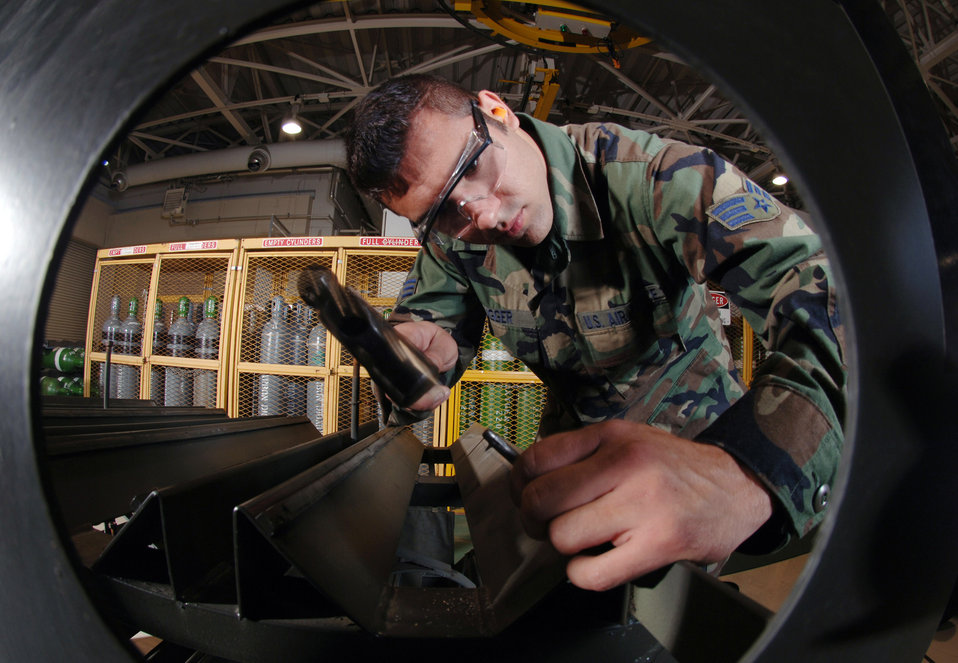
Backshop

YOKOTA AIR BASE, Japan (AFPN) -- Senior Airman Buck Dugger uses a hammer to punch a hole on an oxygen cart during repair work here. Airman Dugger is assigned to the 374th Maintenance Group's aircraft structural maintenance element. The element is responsible for structural repair and corrosion prevention of C-130 Hercules assigned here and the more than 200 aircraft that transit here annually.